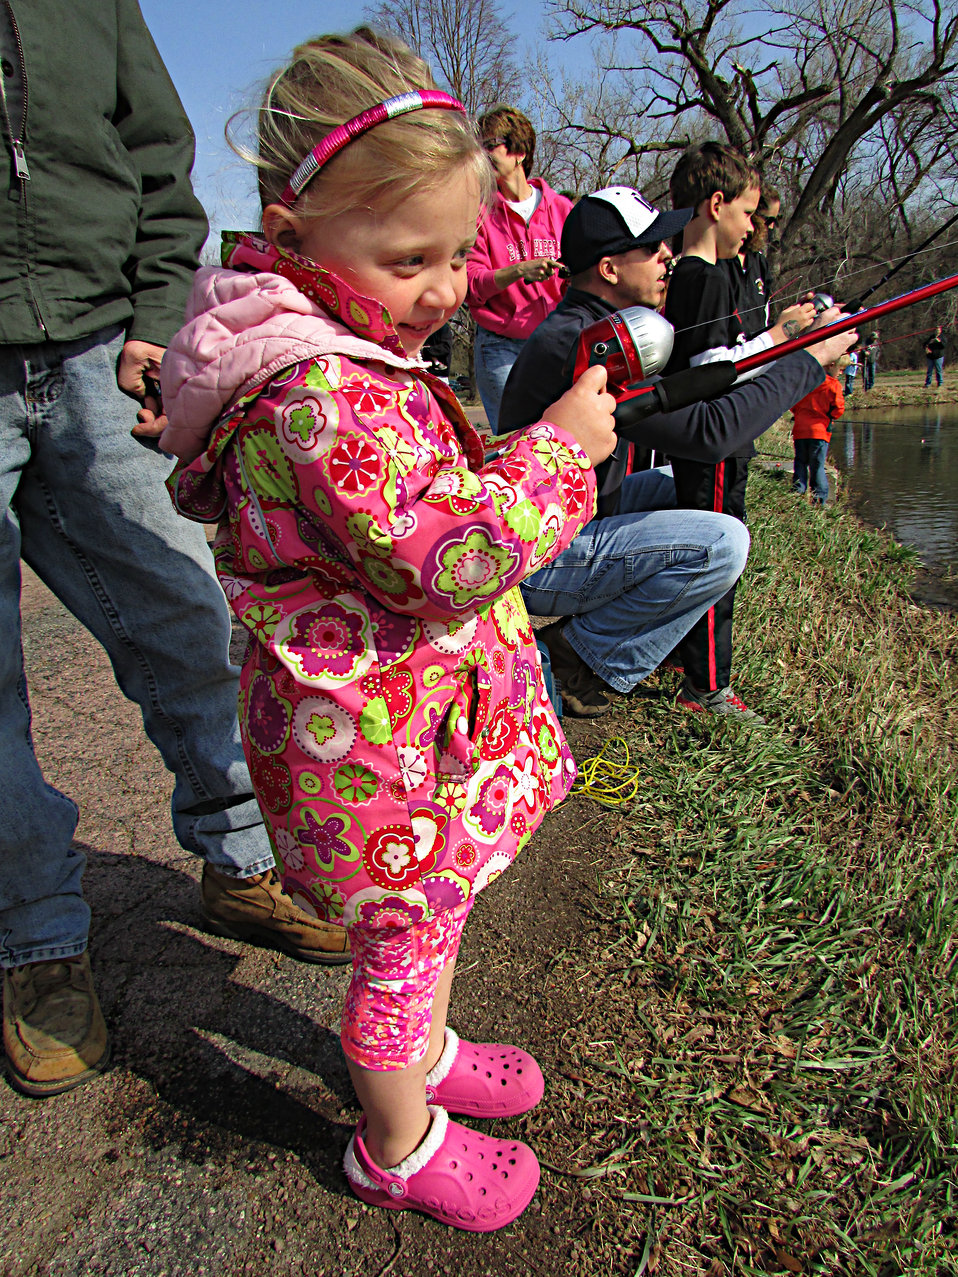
Fashionable Fishing

All the pink didn't scare the fish away.